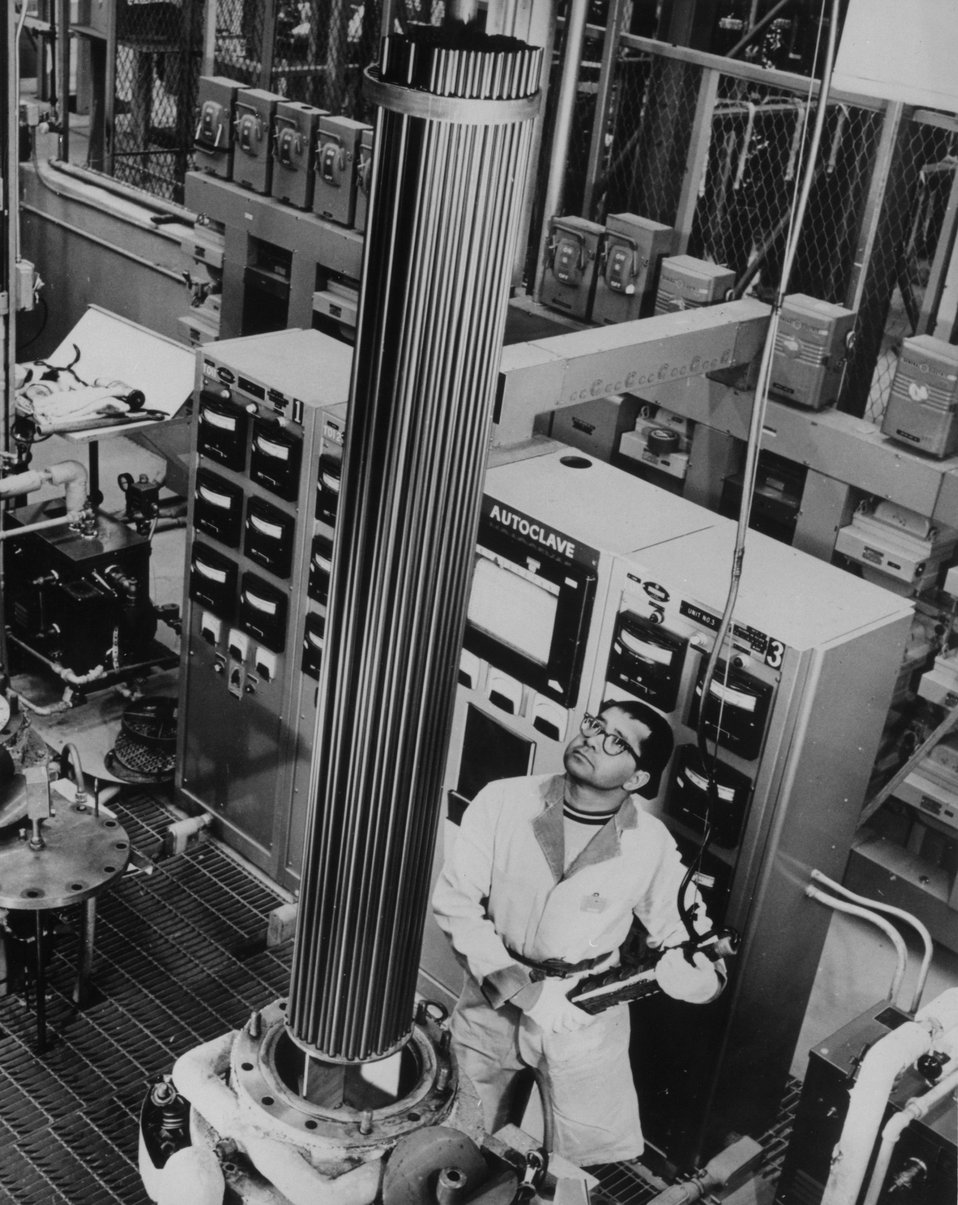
Zircaloy tubes that hold uranium oxide fuel pellets are moved through a series of 'baths' and cleaning processes in a preliminary fuel production step. c. 1971